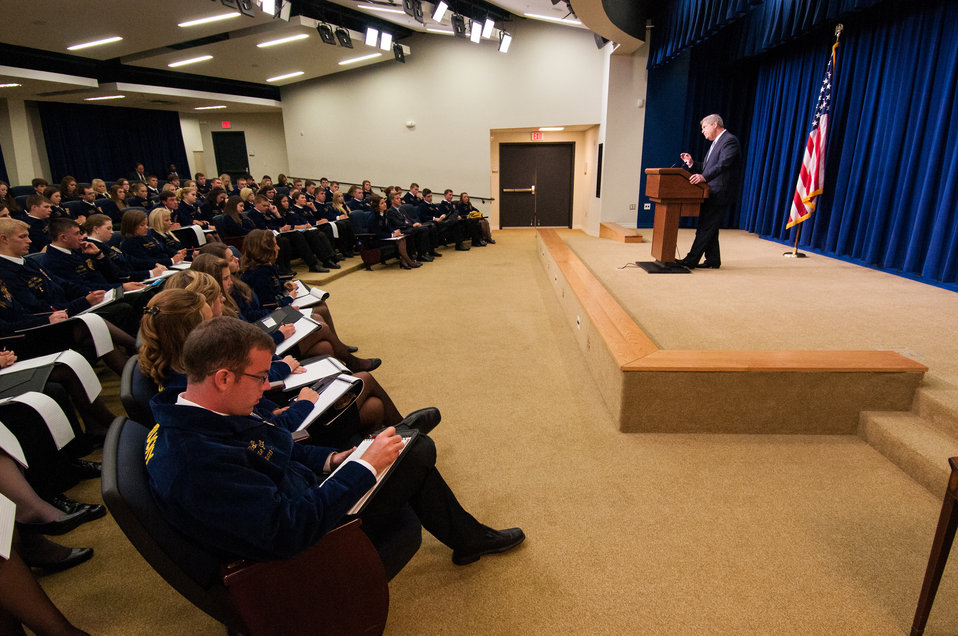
Agriculture Secretary Tom Vilsack speaks at a meeting of the White House Rural Council to an audience of the National State President’s Conference of the FFA on Wednesday, Jul. 24, 2013 in Washington, D.C. Secretary Vilsack took questions from the audience and discussed international, national and agricultural production topics with the FFA State President’s.